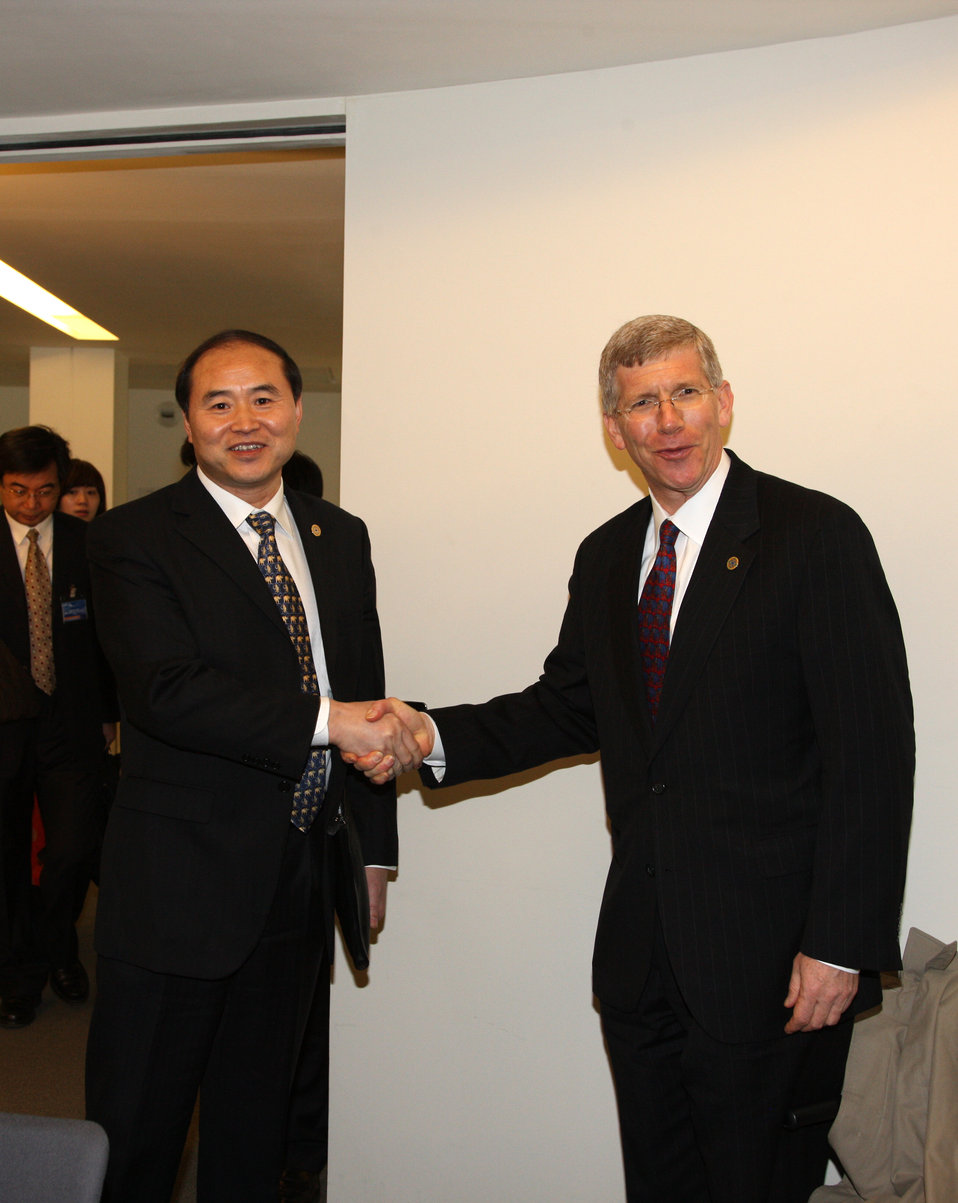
5C3K3786 copy